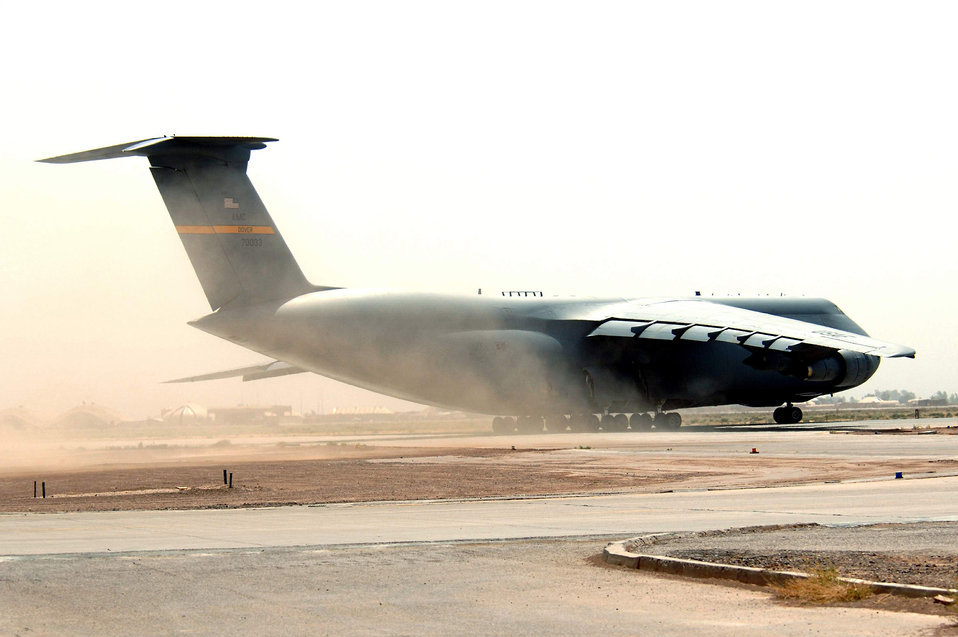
Oct. 13 airpower summary: C-5s resupply coalition forces

A C-5 Galaxy lands at air base in Southwest Asia
Coalition aircraft flew more than 120 airlift sorties; delivered 300 tons of cargo and more than 3,400 passengers were transported Oct.13. This included approximately 24,000 pounds of troop resupply air-dropped in Afghanistan.